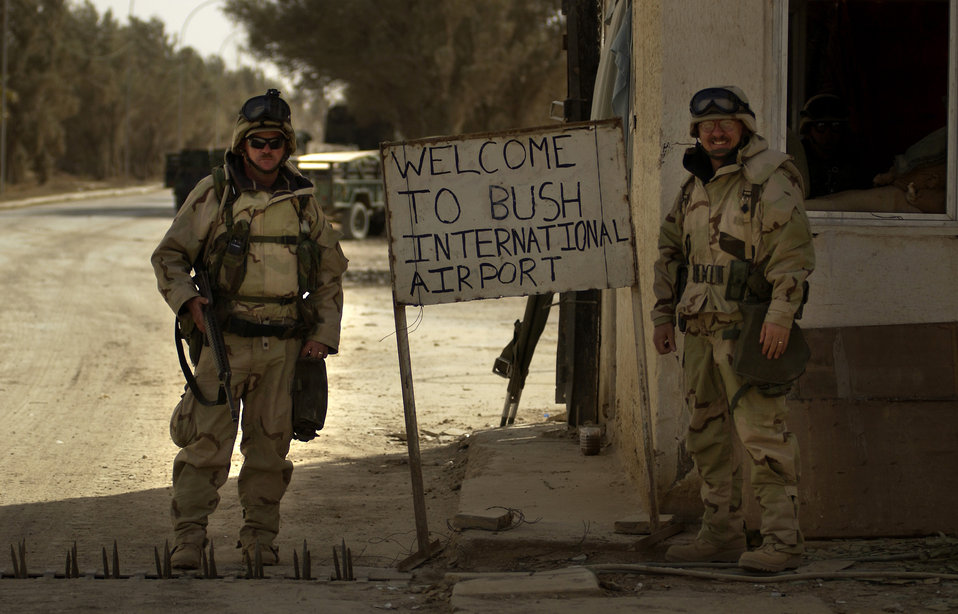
Here's your sign

OPERATION IRAQI FREEDOM -- Air Force members from the 621st Air Mobility Group Tanker Airlift Control Element pose in front of a makeshift sign at a forward-deployed location in southern Iraq on March 28.